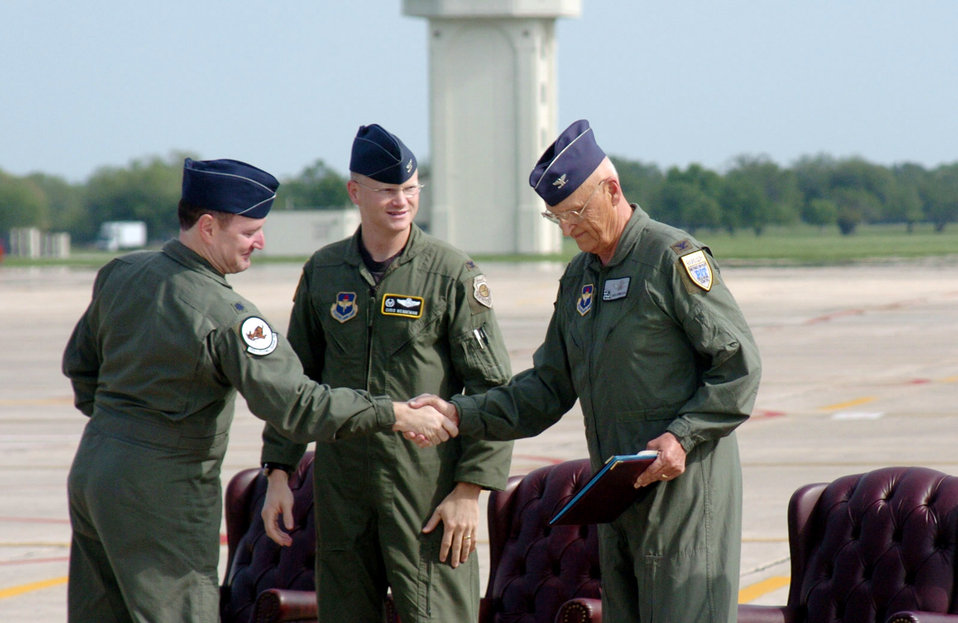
Tweet closes 42-year Randolph career

Lt. Col. Jimmy Donohue, (left) 559th Flying Training Squadron commander, and Col. Christopher Weggeman, 12th Operations Group commander, thank retired Col. Robert Hermanson, 559th FTS commander from July 1974 to July 1976, for his service with the unit and the Tweet. Colonel Hermanson was the guest speaker at the T-37B base retirement ceremony April 6.